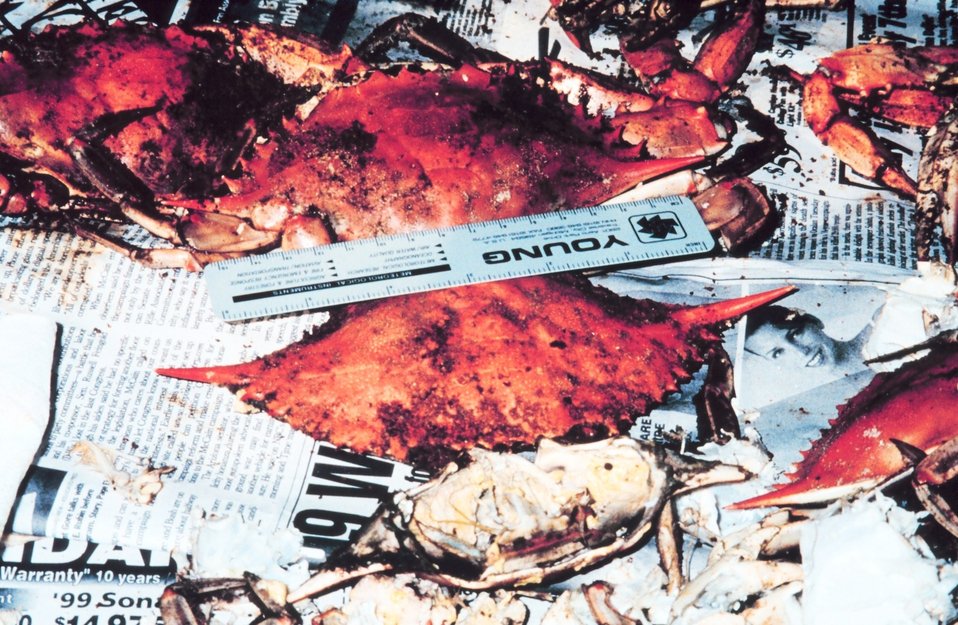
Although few blue crabs in 1999, some grew to large size. A six-inch ruler was not long enough to measure these crabs caught in the Patuxent River.